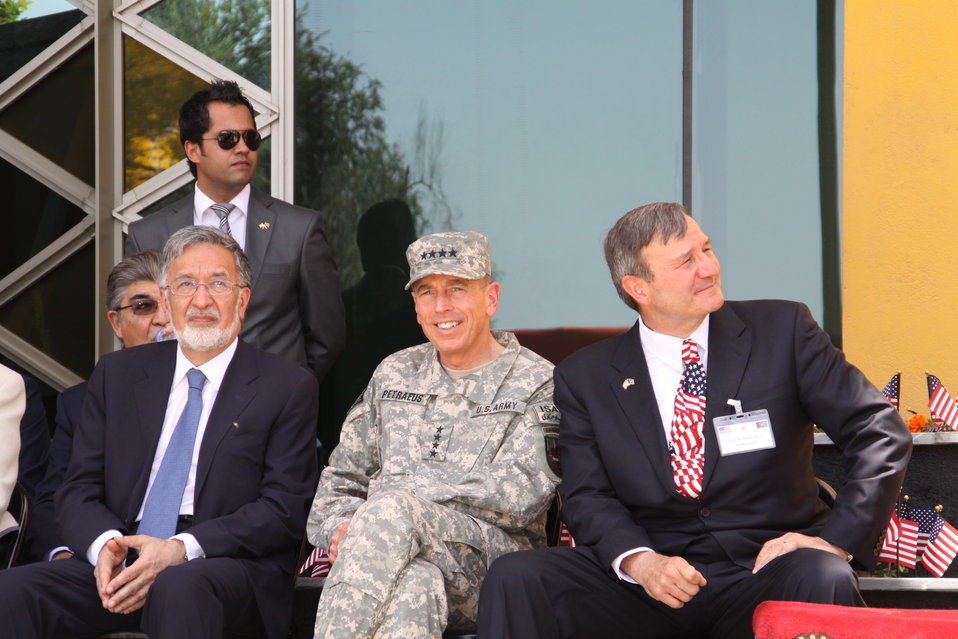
Kabul Official July 4th Celebration